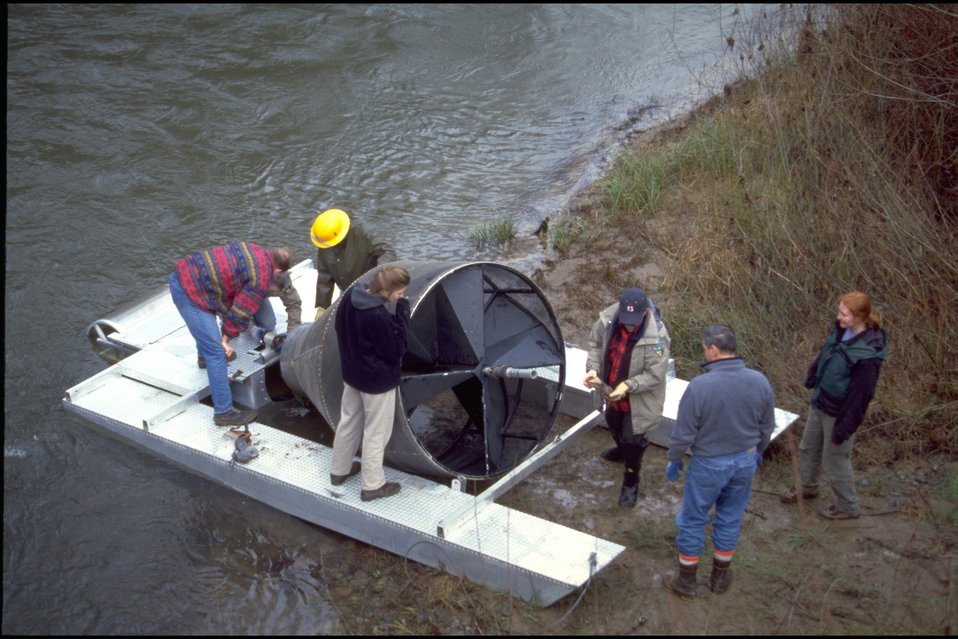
Installing fish trap on Wolf Creek.